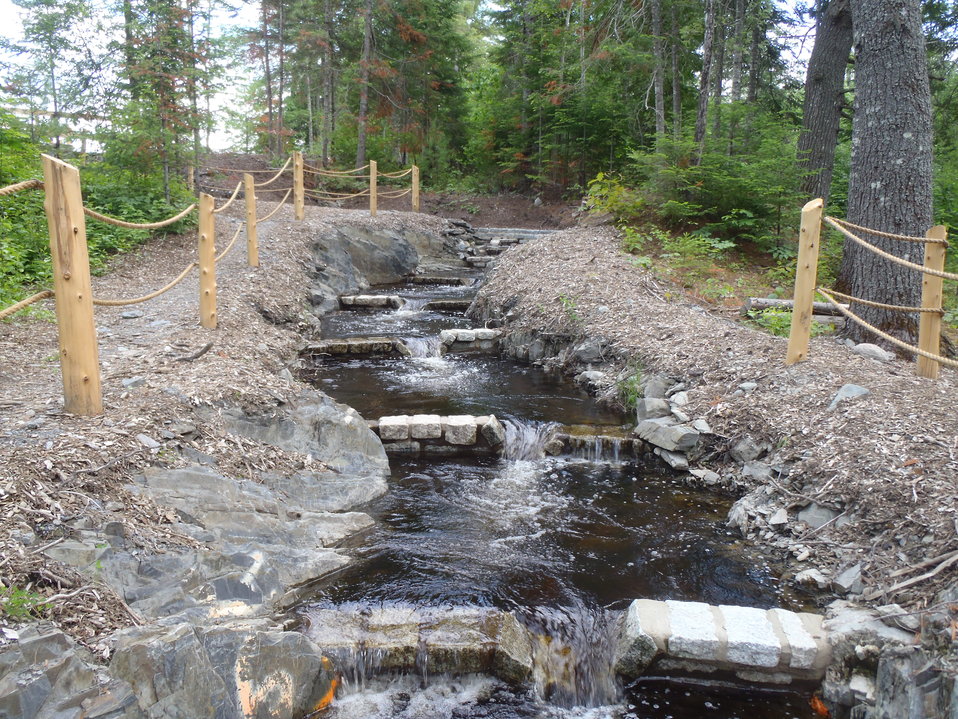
Fish ladder at a park in ME 3